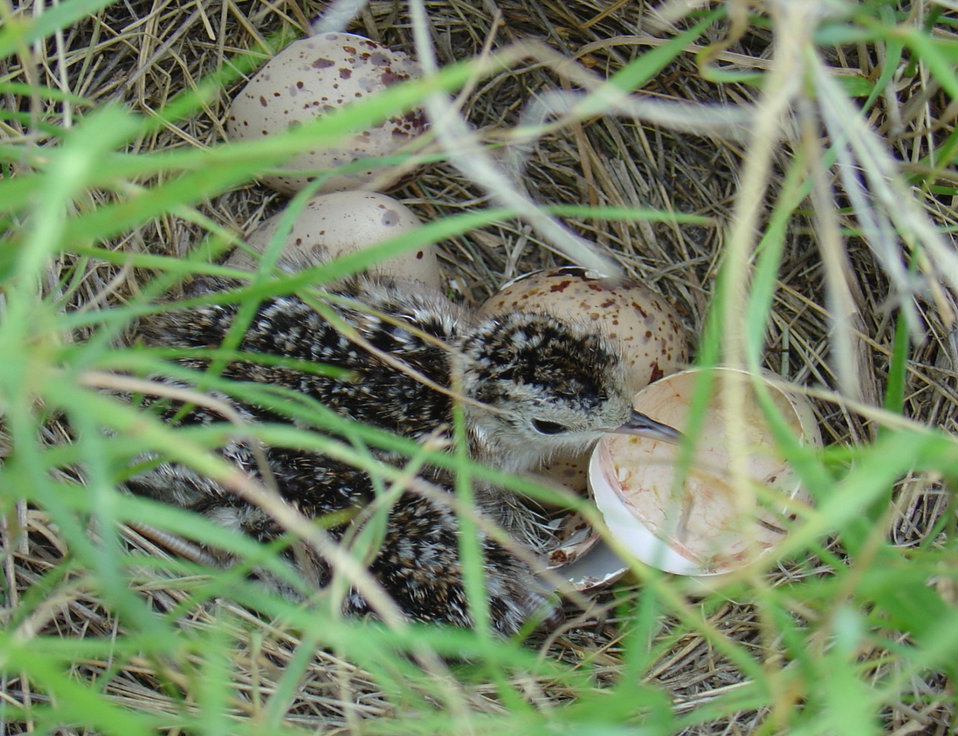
Hatchling Upland Sandpiper in Canada. Supported by the Neotropical Migratory Bird Conservation Act.